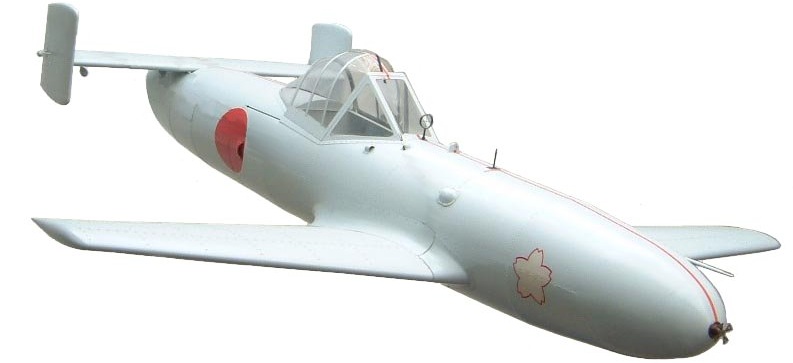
Japanese Ohka at the Yasukuni Shrine. Note that I've deleted a guy in the bottom left corner of the photo. This is a replica of the Yokosuka MXY7 Ohka Model 11.